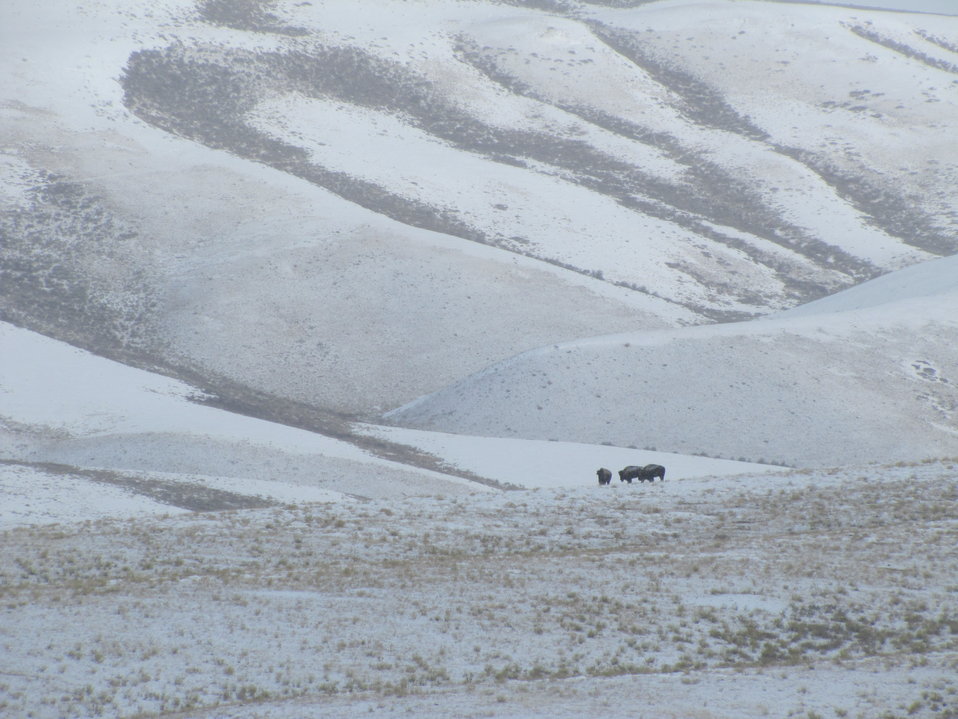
Weathering a Winter Storm

A group of three bison stand on a ridge line on the northern end of the refuge. Bison are extremely well adapted to winter weather.